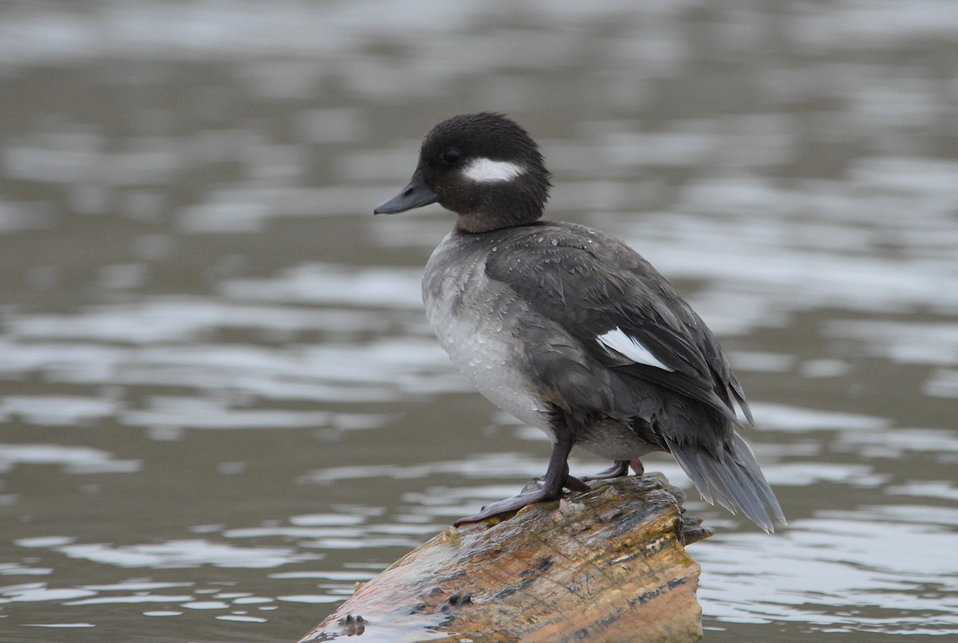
Bufflehead (female)